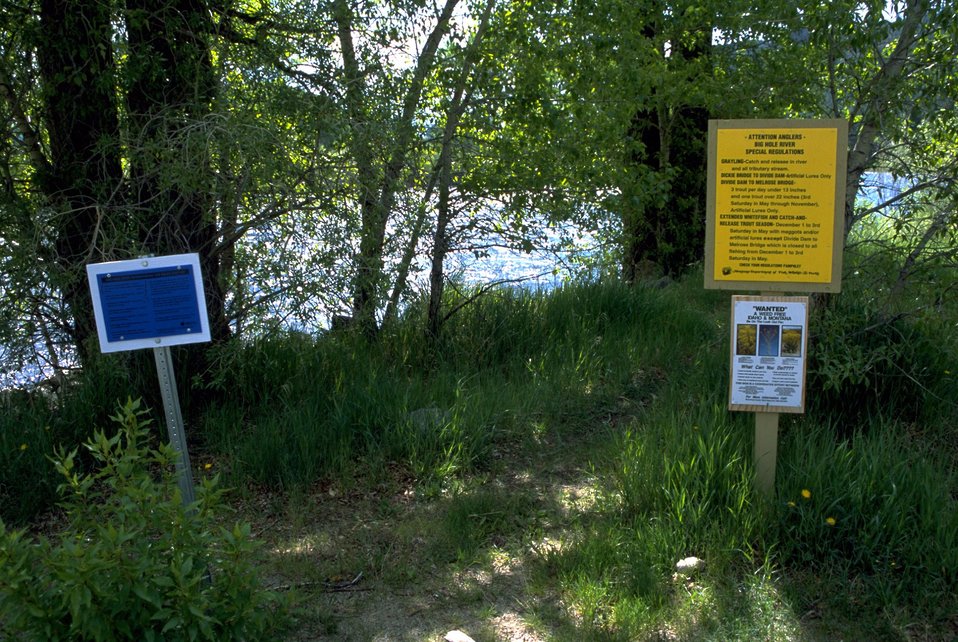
Regulation signs at the Divide Day Use Area